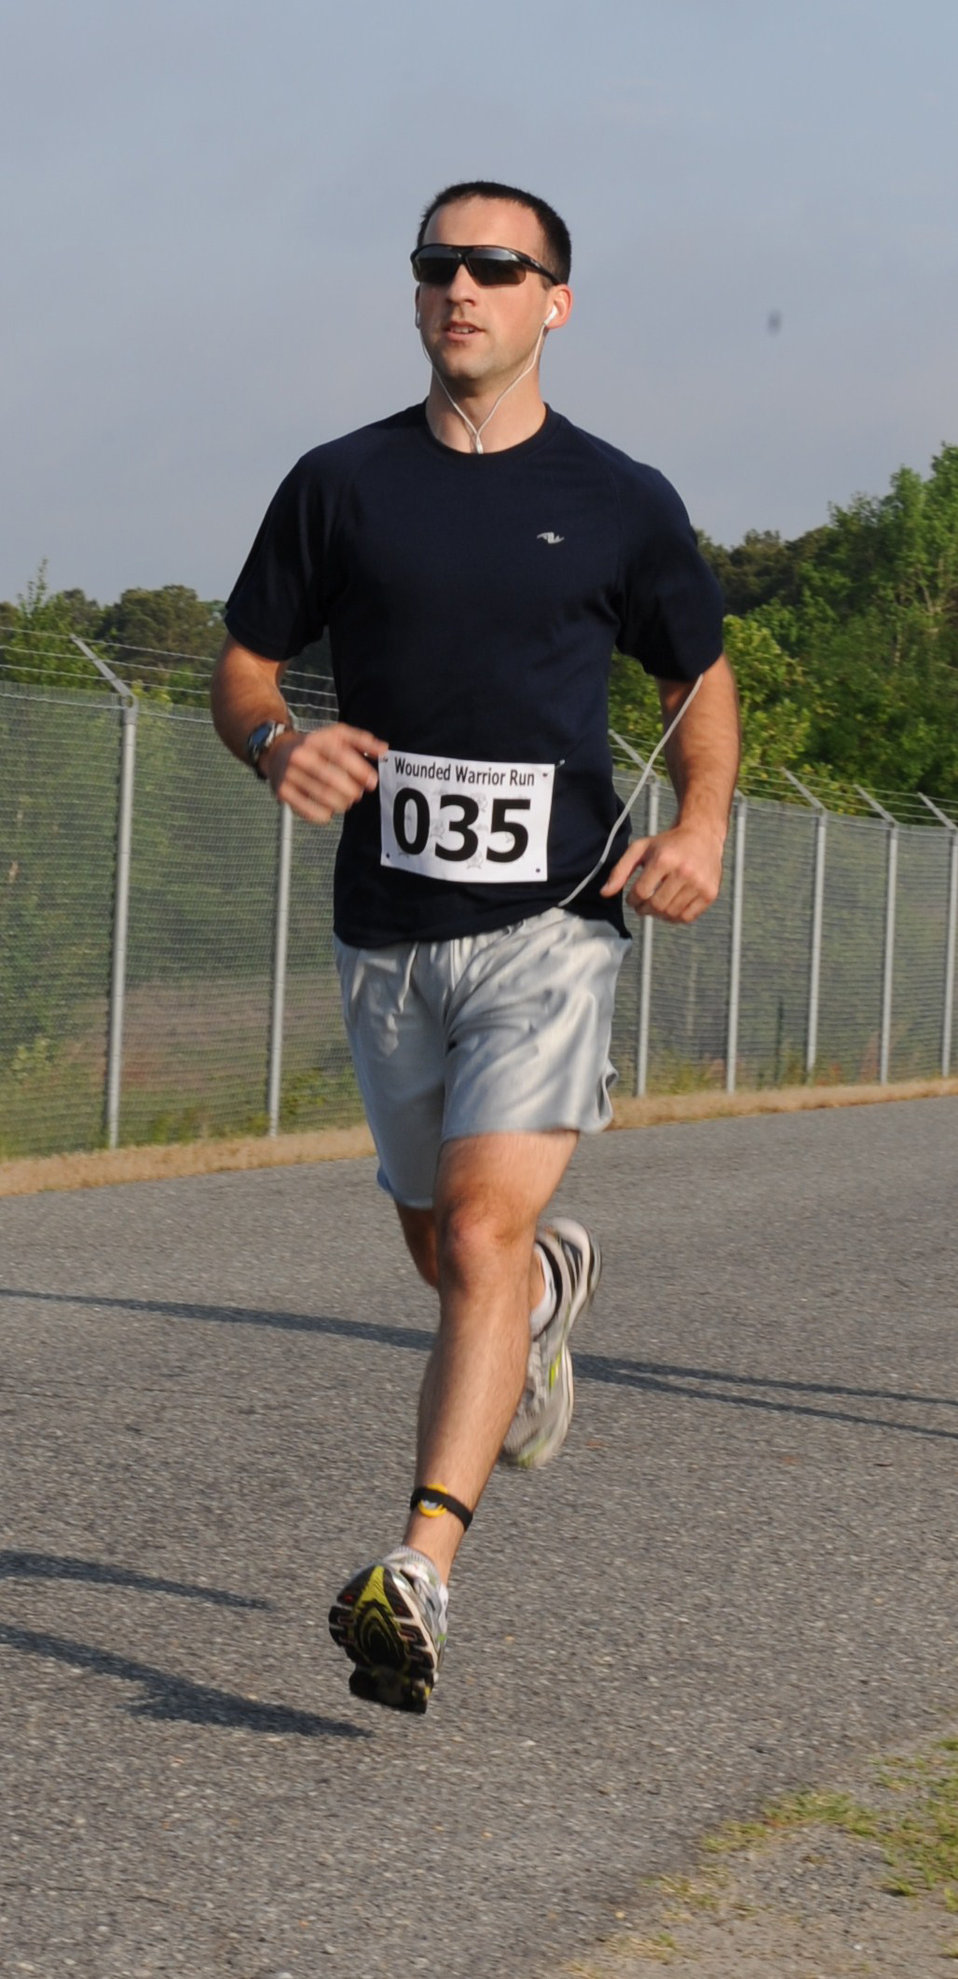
Wounded Warrior Project

Capt. Matthew Lynch keeps a steady pace on his way to winning the Wounded Warrior Project half marathon race May 1, 2010, at Seymour Johnson Air Force Base, N.C. Captain Lynch is from the 4th Fighter Wing judge advocate general office. The race raised money for the project which supports servicemembers injured in combat operations.